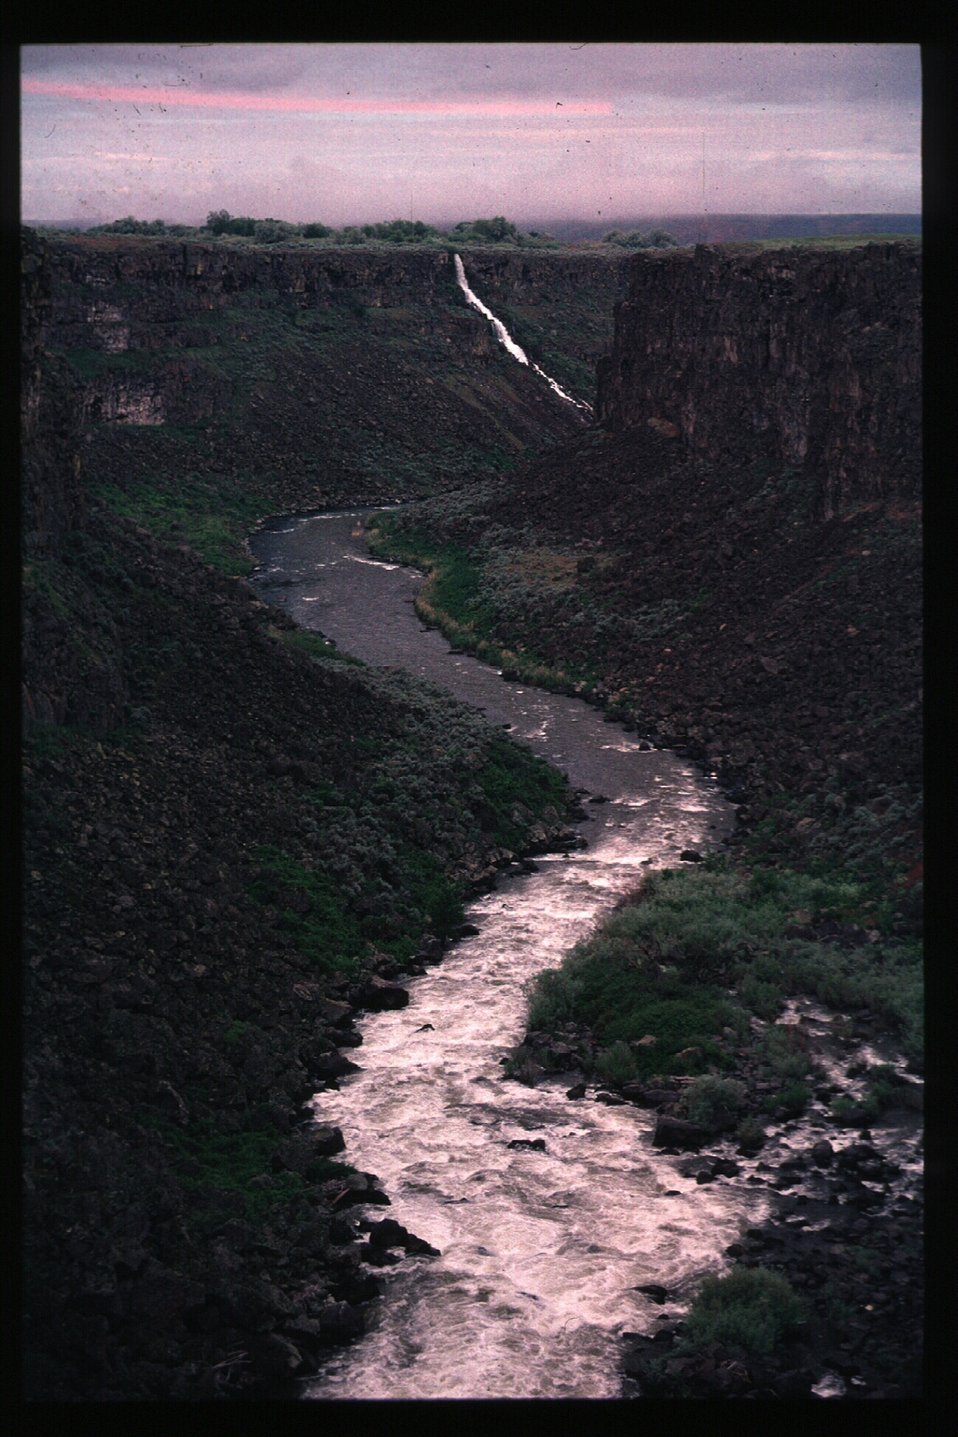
Water falls Rapids Recreation Scenic Snake River Jarbidge Field Office LSRD Lower Snake River District